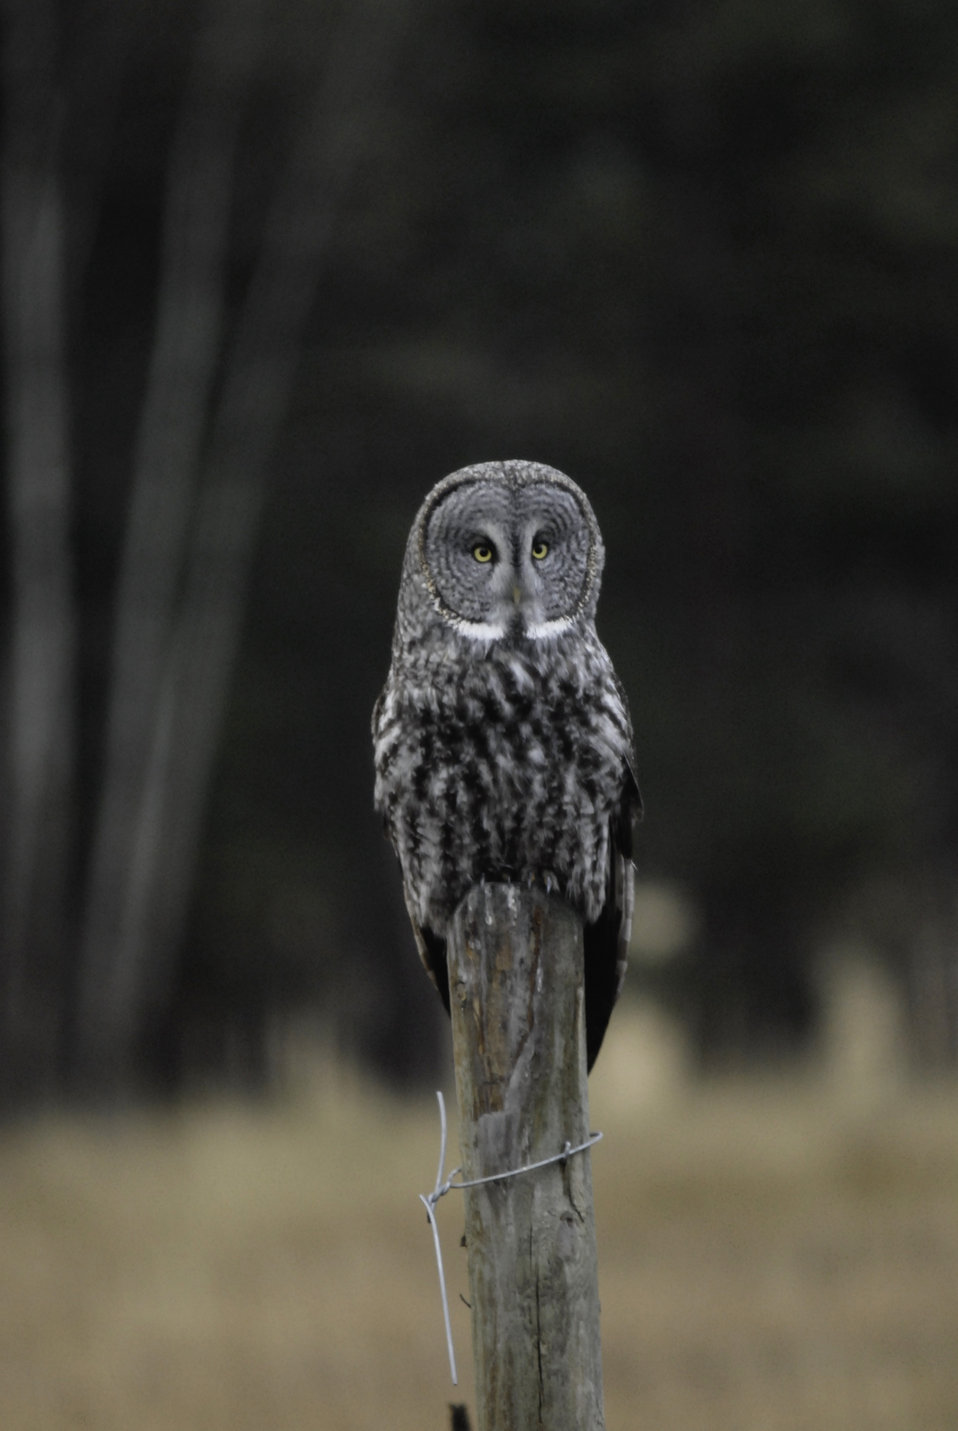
A Great Gray Owl sits on a fence post in the National Bison Range Wildlife Refuge in Montana on November 17, 2007. Great Gray Owls are the largest owl species in North America with a wingspan over 4 feet and can weigh over 2 pounds. The U.S. Fish and Wildlife Service administers the National Bison Range Wildlife refuge as part of the National Wildlife Refuge System. The refuge was established in 1908 and is one of the oldest Wildlife Refuges in the nation and was established to support a population of American bison. There are approximately 350-500 American bison. Other large wildlife found on the Range includes elk, whitetail and mule deer, pronghorn antelope, bighorn sheep and black bear.